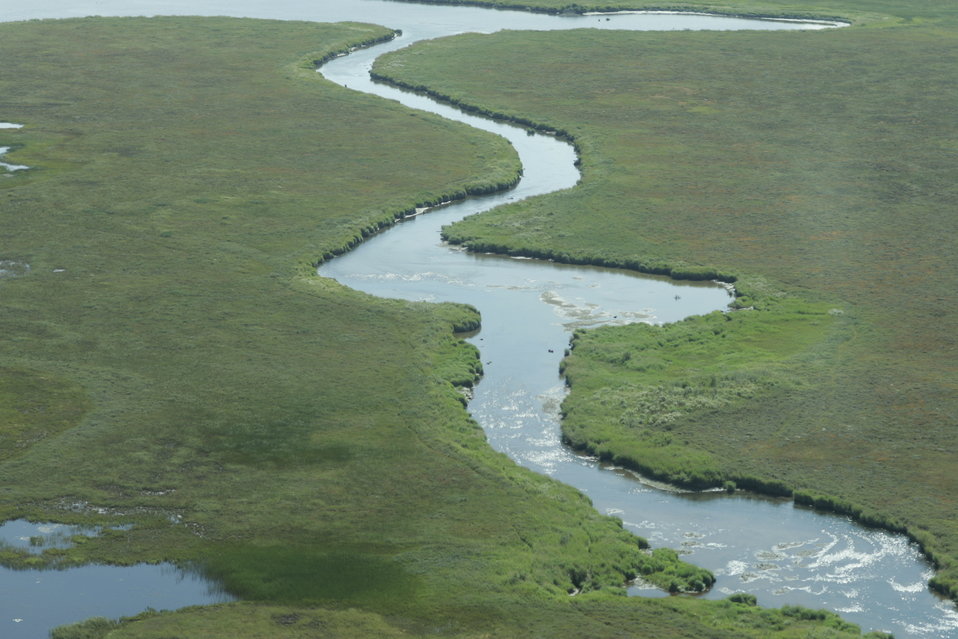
Togiak Nation Wildlife Refuge